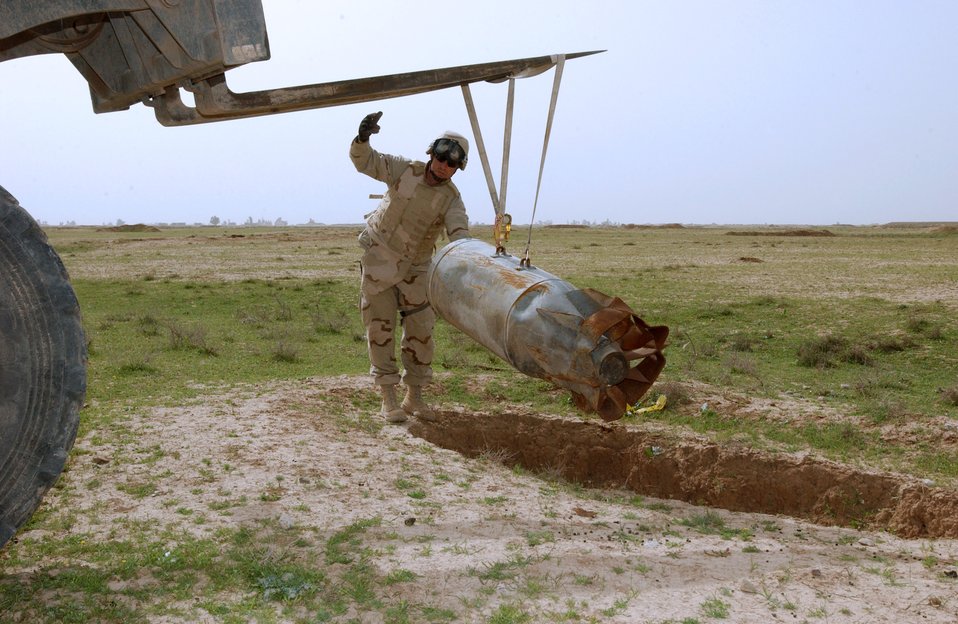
Having a blast

KIRKUK, Iraq -- Master Sgt. Kevin Johnson guides a Russian-made incendiary bomb into a disposal pit. The munition will be laced with C-4 explosives and detonated. He is an explosive ordnance disposal Airman assigned to the 506th Expeditionary Civil Engineer Squadron at nearby Kirkuk Air Base.